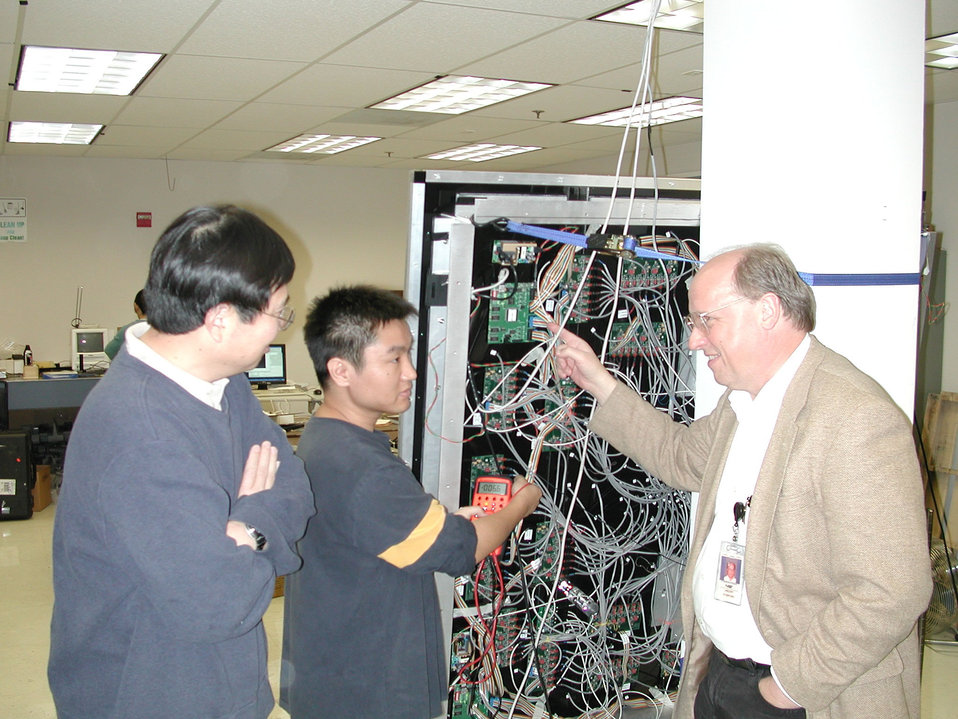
Audio Telescope

'Audio telescope' system uses three separate processing boards to digitize the input from an array of 192 microphones. Researchers (l. to r.) Roger Xu (IAI), Gang Mei (IAI) and Vincent Stanford (NIST) inspect the circuitry.